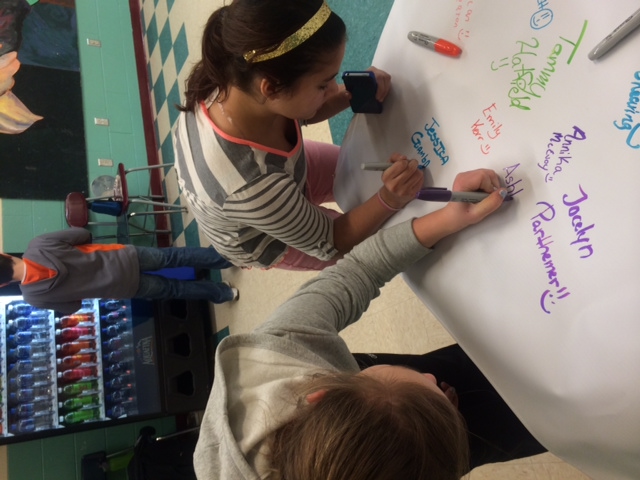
Livingston, NY: Keshequa NDFW

Council on Alcohol and Substance Abuse of Livingston County, Inc. (CASA) held an event during tNIDA's National Drug Facts Week, 2014.